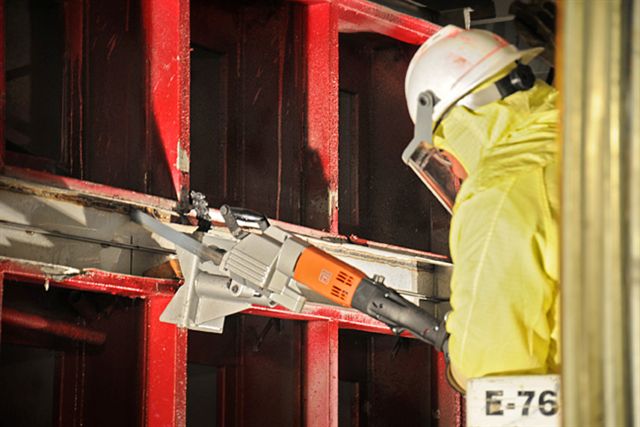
RAN DD INTEC S84 CPP-602 UPSTAIRS 070610 P6554-006 A